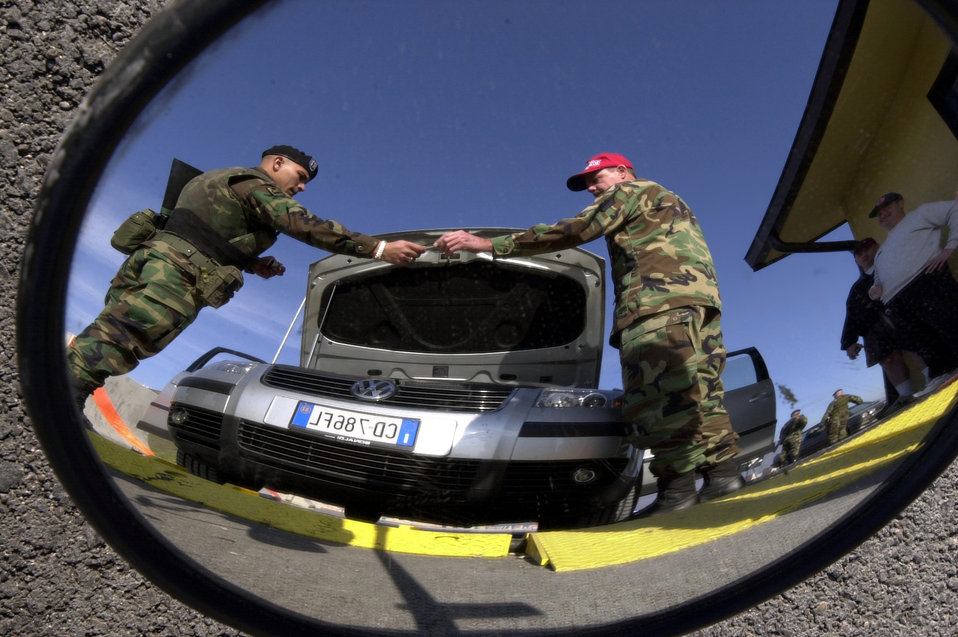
Bonet

AVIANO AIR BASE, Italy -- Pfc. Andres Bonet (left) of the Puerto Rico Army National Guard returns the identification card of Master Sgt. Vern Wickline after checking under the hood of Wickline's car at a gate here March 17. Bonet is one of the Army National Guard members now helping to protect Air Force bases in the United States and overseas. Wickline is also a mobilized Guardsman.